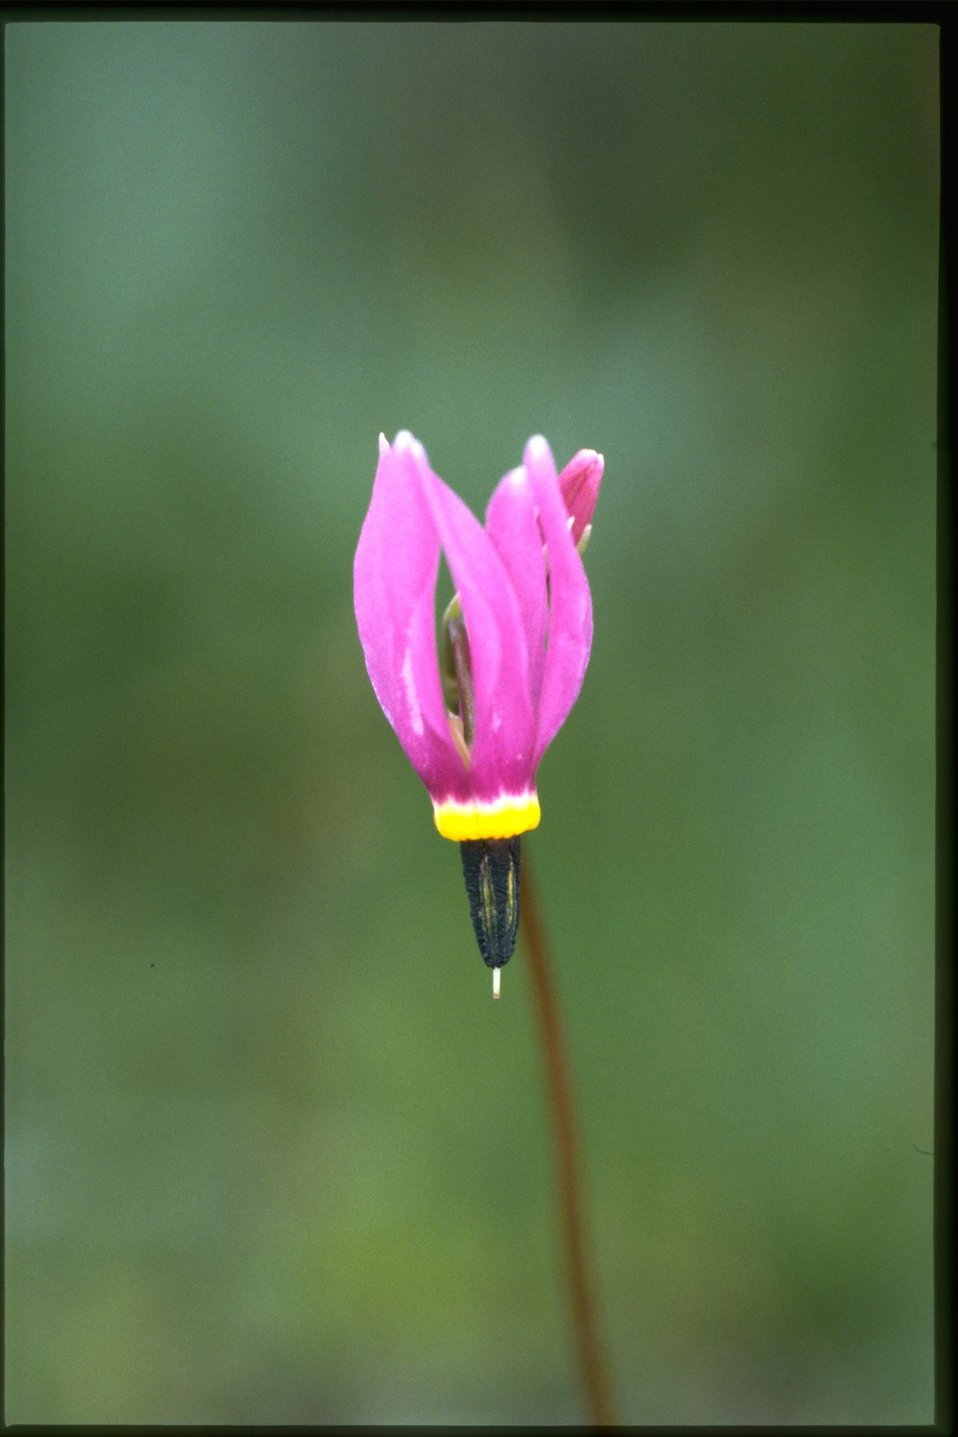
Closeup shot of Dark-Throat Shooting Star, Dodecatheon Pulchellum wildflower.